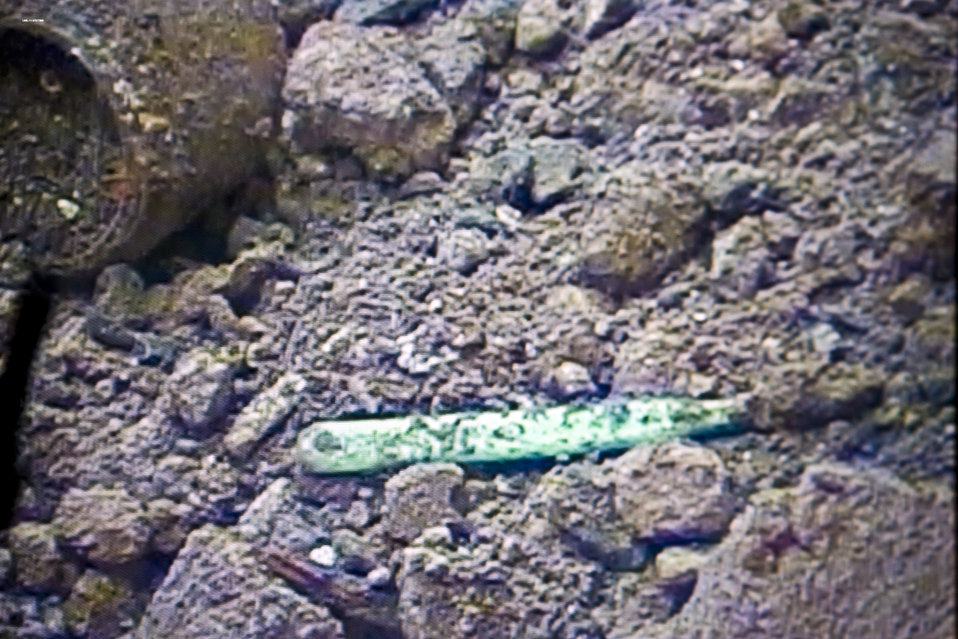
Los Alamos - Excavating a Manhattan Project Waste SiteExcavating a Manhattan Project Waste Site

A toothbrush was one of the surprises that surfaced as Recovery Act crews excavated Los Alamos National Laboratory’s oldest waste dump.